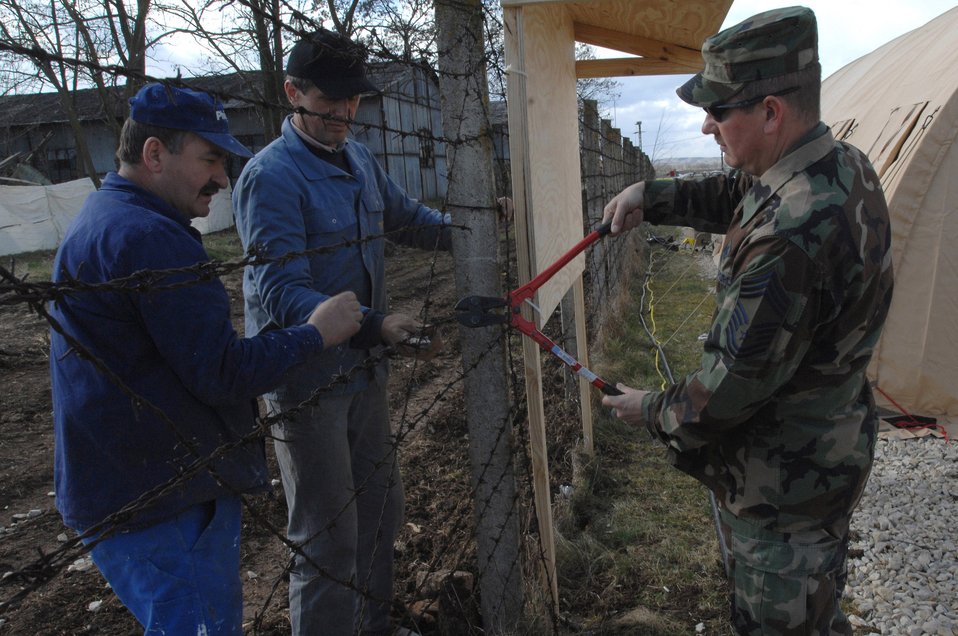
Civil engineers build Noble Endeavor Airmen in Romania home away from home

Chief Master Sgt. Terry Masters and Romanian nationals cut the fence bewteen the Romanian base and tent city March 24 at Campia Turzii, Romania. A deployed civil engineering team built an entire tent city in 96 hours to support U.S. operations at the air base. The Airmen are part of a team which is augmenting NATO forces in securing the airspace around Bucharest, Romania, for the NATO Summit April 2 to 4. Sergeant Masters is chief of the 404th Expeditionary Air Base Squadron